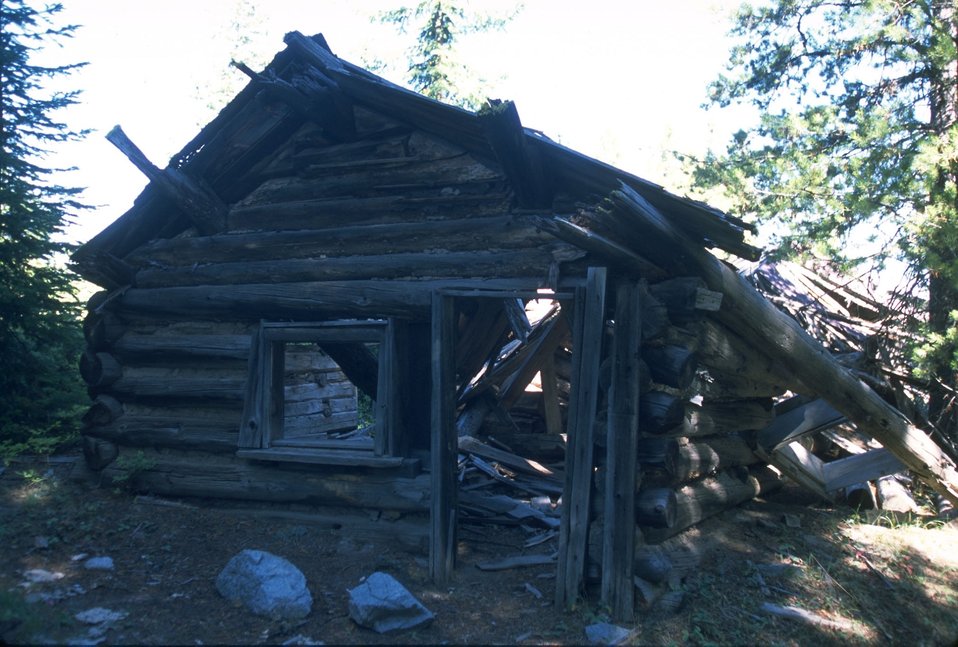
Dilapidated cabing in Coloma Ghost Town